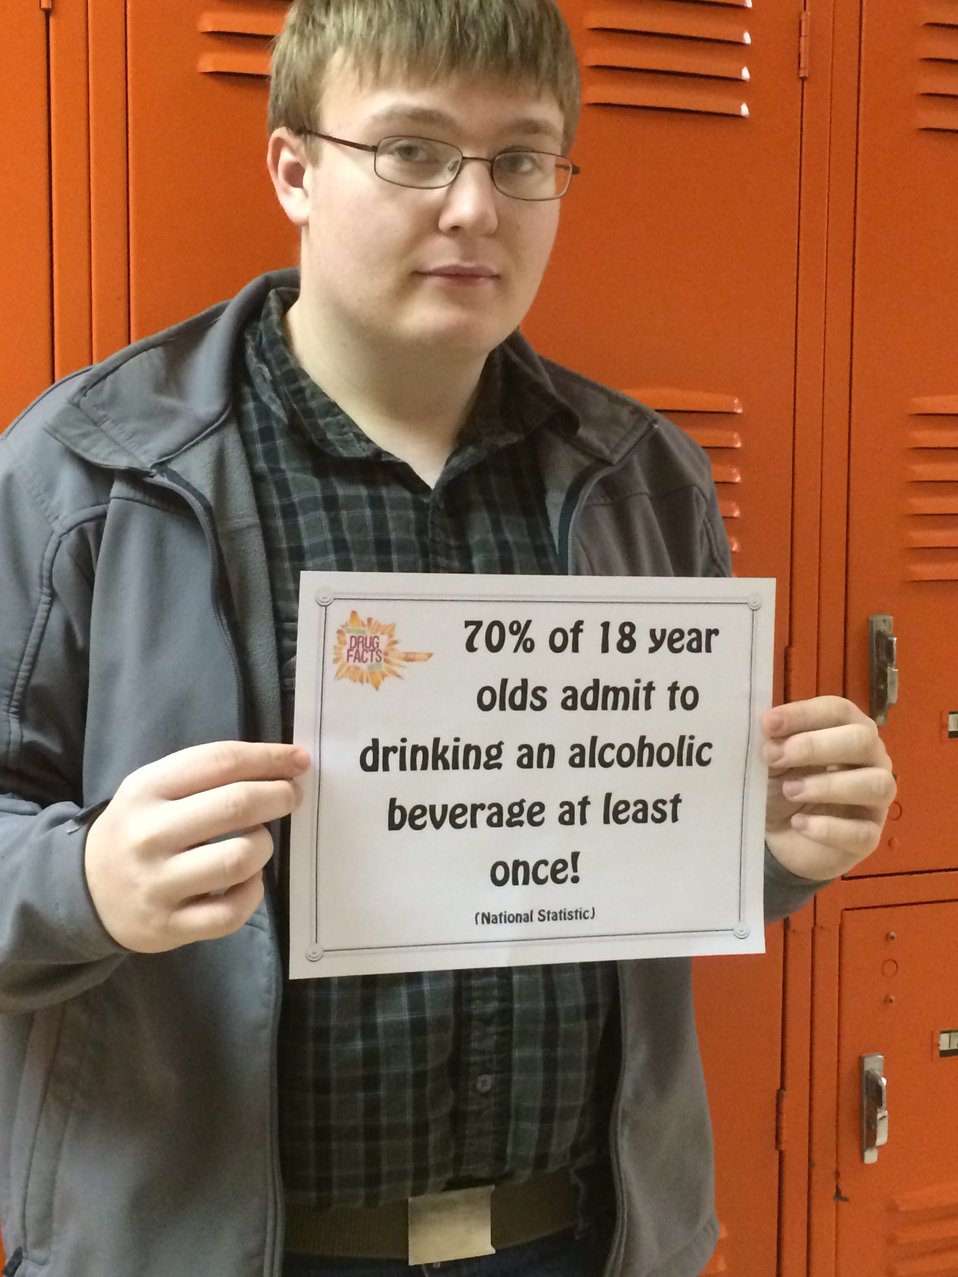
I'm Shattering the Myths Because...

Teenagers from the Van Buren County SAFE Coalition's, Youth Leadership Council (YLC) in Keosauqua, Iowa participate in various events during National Drug Facts Week, 2014.